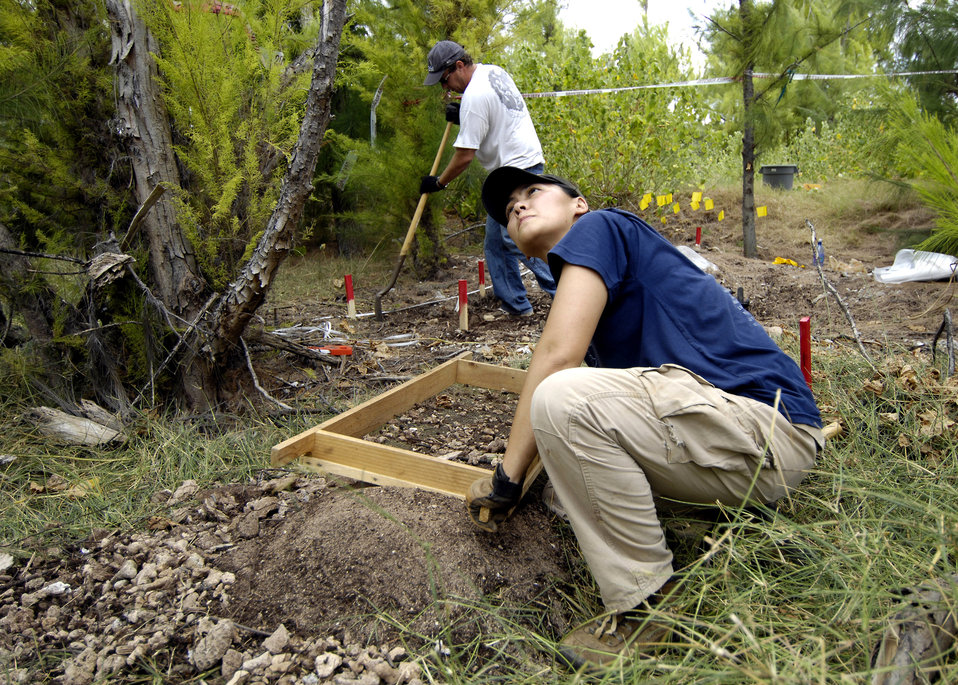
Servicemembers search for POW/MIAs on Wake Island

Denise To and Greg Berg excavate a dig site Jan. 12 on Wake Island. Ms. To and Mr. Berg, forensic anthropologists, were sent to do a site survey after Wake Island officials notified The Joint POW/MIA Accounting Command of bones located on the island. JPAC is charged with achieving the fullest possible accounting of all Americans missing as a result of past conflicts.